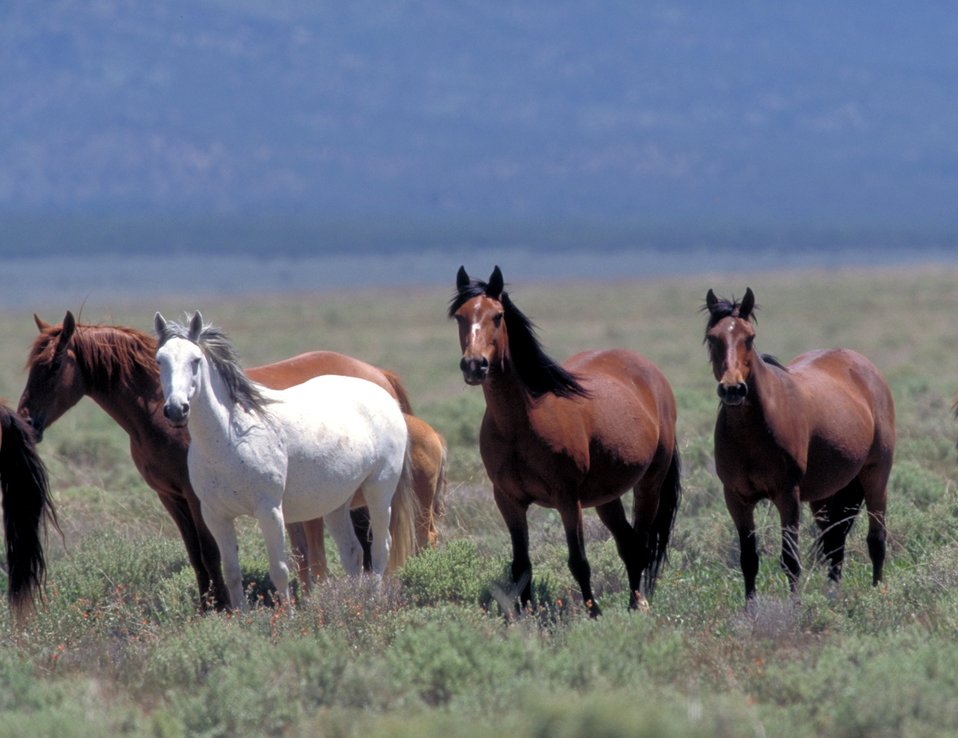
Onaqui Herd near Dugway, Utah.